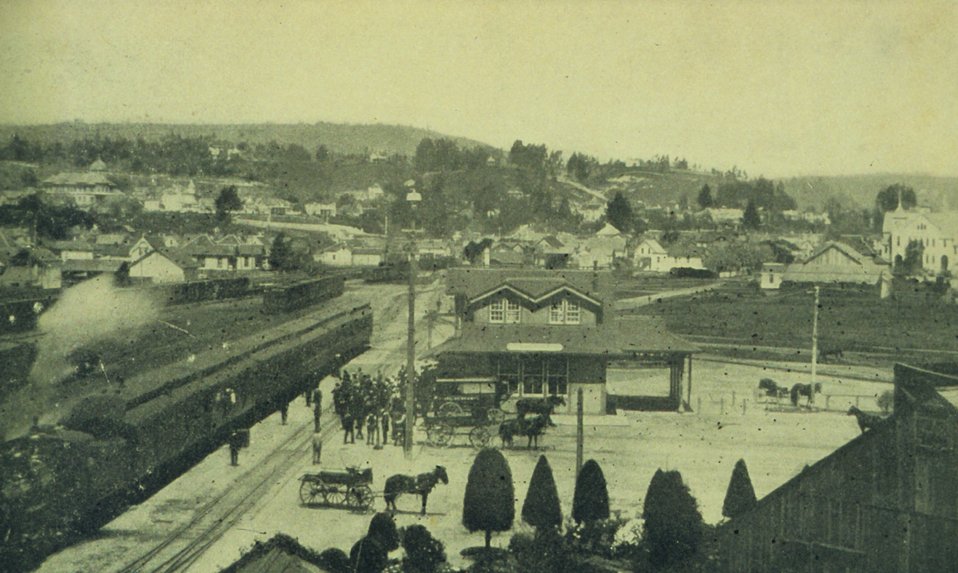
Union Depot at Santa Cruz. In: 'The City of Santa Cruz and VicinityCalifornia.' Published by The Santa Cruz Board of Trade. 1905.